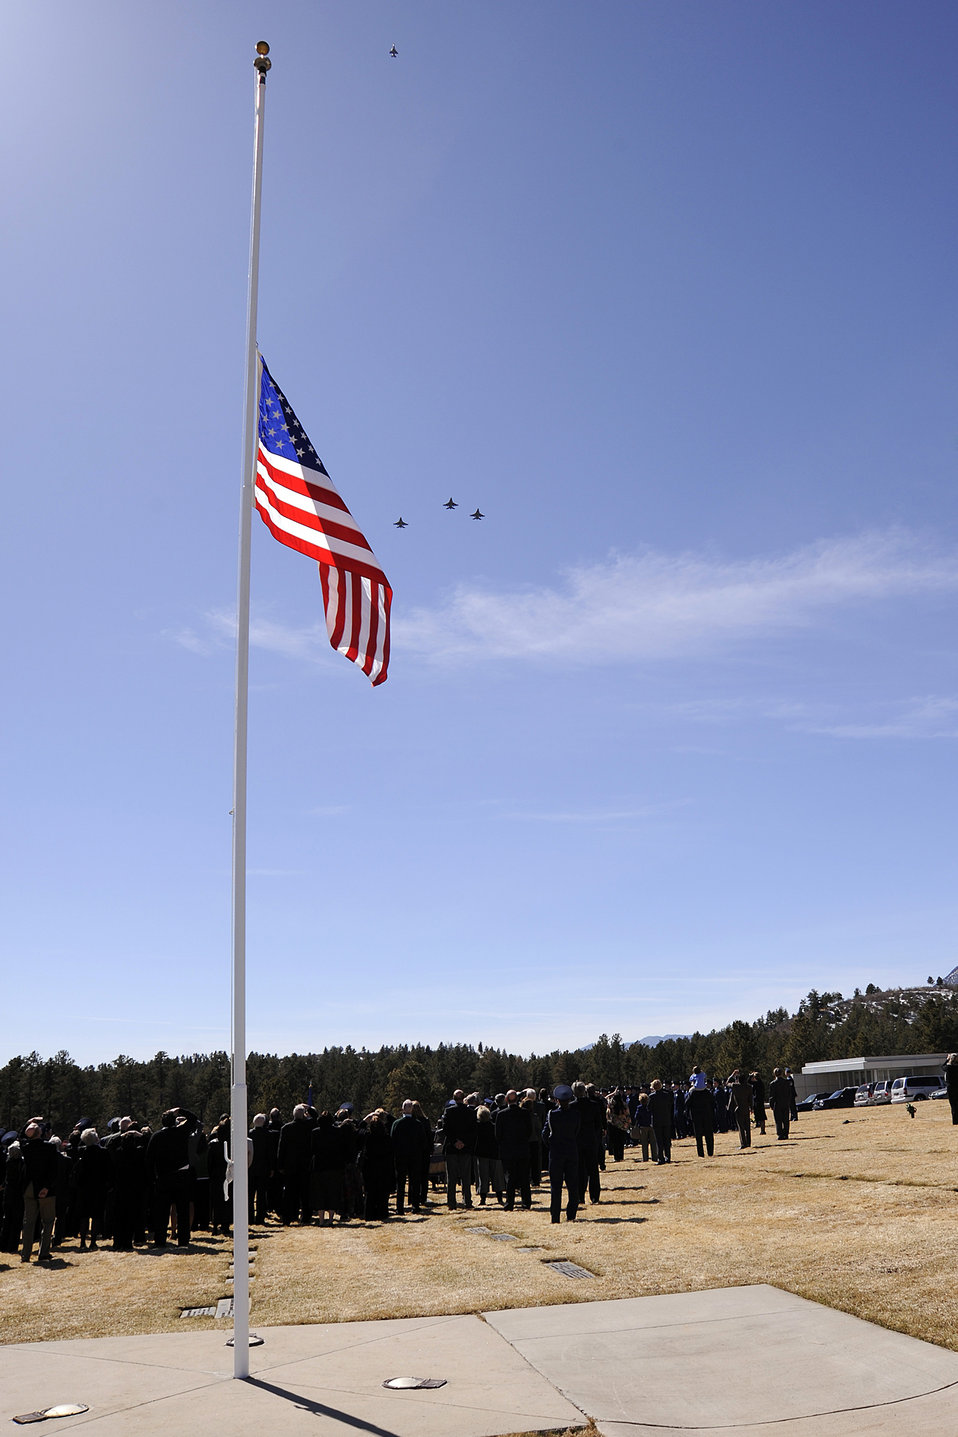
General Clark honored with service

F-16 Fighting Falcons perform a missing-man formation over the graveside service of Lt. Gen. A.P. Clark after the funeral mass March 17, 2010, at the U.S. Air Force Academy's Cadet Chapel in Colorado. General Clark, who was the Academy's sixth superintendent from Aug. 1, 1970 to July 31, 1974, was a 1936 graduate of West Point and went on to a flying career after graduation. The F-16s are assigned to Luke Air Force Base, Ariz.